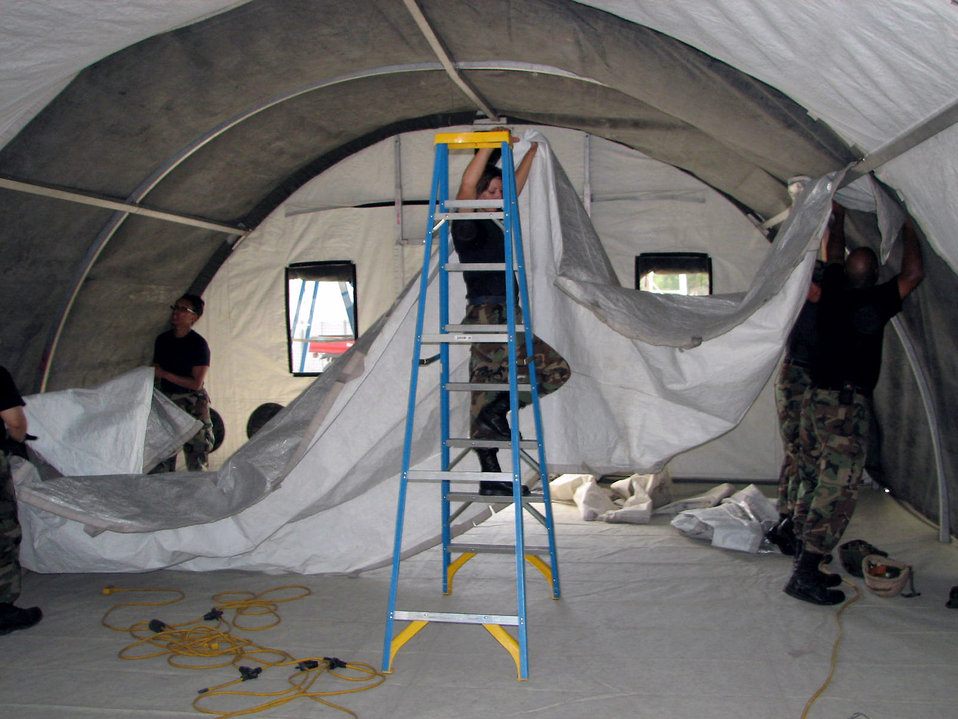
Airmen hone contingency skills at Silver Flag

Airmen take part in Silver Flag's tent-building exercise at Tyndall Air Force Base, Fla. More than 140 Silver Flag students set up 10 shelters in preparation for a forward deployment exercise later in the week.